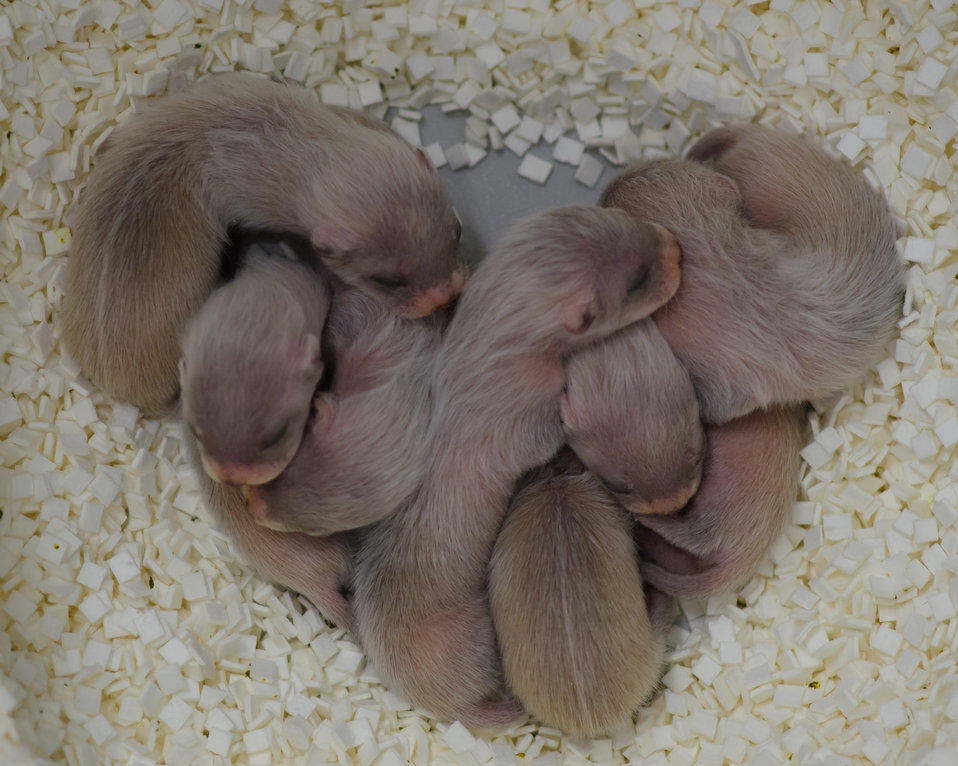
Ferret Kit Heart

These kits were born May 21, 2011 at the National Black-footed Ferret Conservation Center.